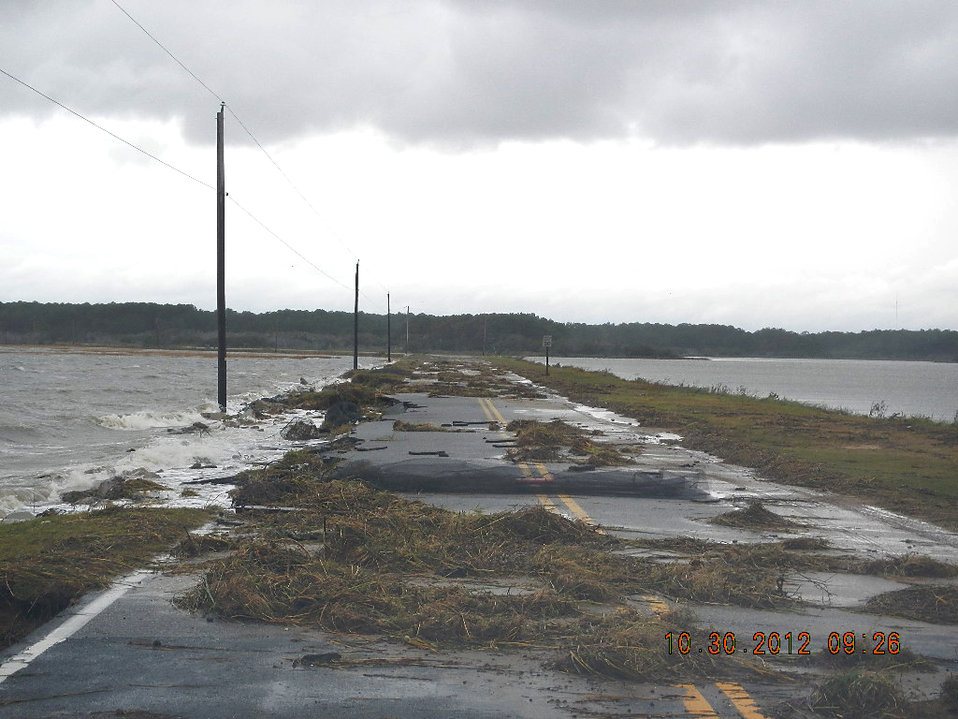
Hurricane Sandy hit Chincoteague National Wildlife Refuge (VA)

Heavy damage occurred to the road leading to the Toms Cove Visitor Center.